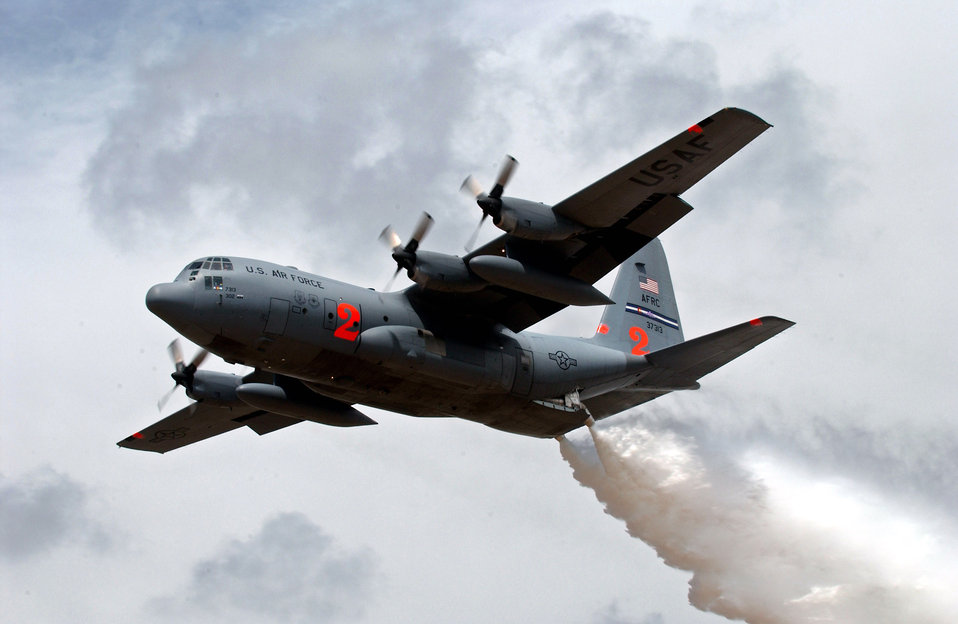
Air Force C-130s equipped to fight fires

The Air Force has four wings flying C-130 Hercules aircraft that can be equipped with Modular Airborne Firefighting Systems like the C-130 shown here.